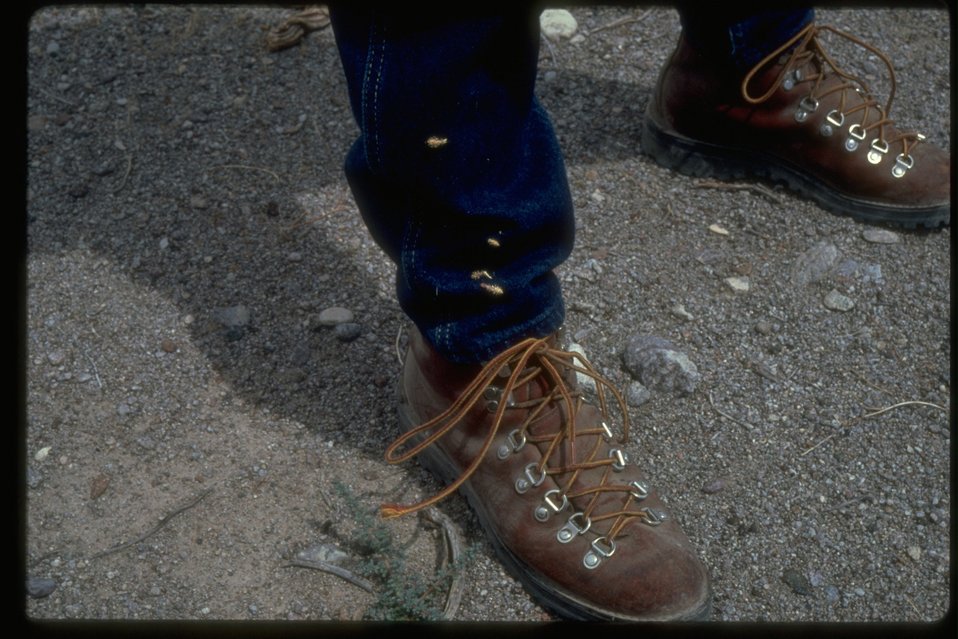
Knapweed seed on pantleg.